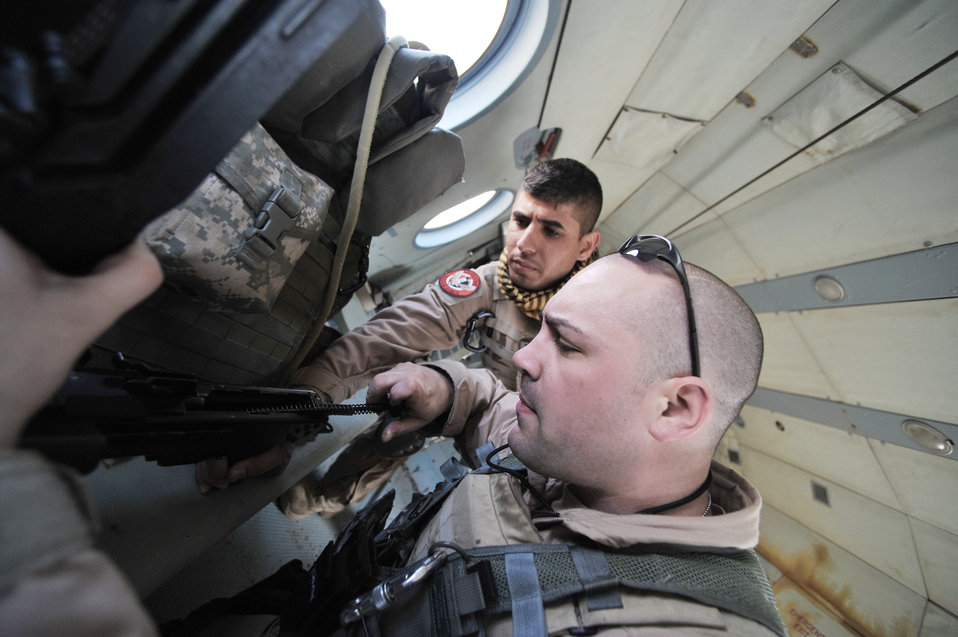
Airmen train Iraqi aerial gunners aim to protect helicopters, defend Iraq

Tech. Sgt. Ethan Masslow and Iraqi air force aerial gunner Athier Fiaz preflight a machine gun onboard an Mi-17 helicopter March 2, 2010, at Camp Taji, Iraq. Sergeant Masslow is deployed from Malmstrom Air Force Base, Mont.